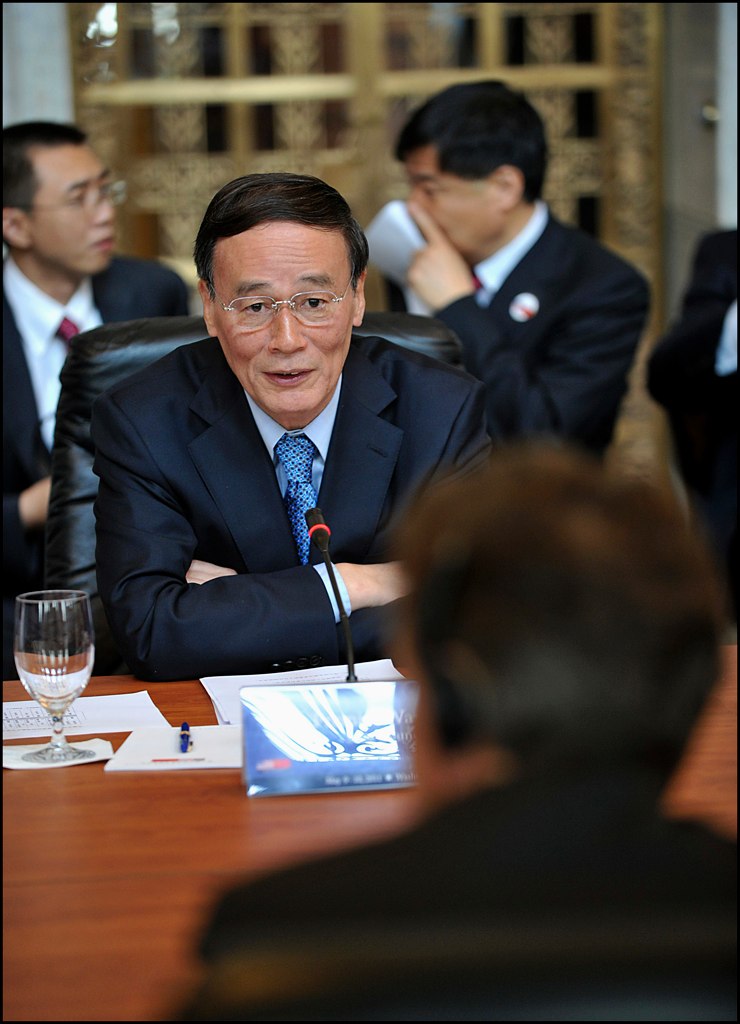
U.S.-China Strategic and Economic Dialogue

Vice Premier Wang Qishan during meetings at the Treasury Department for the economic track of the U.S.-China Strategic and Economic Dialogue.